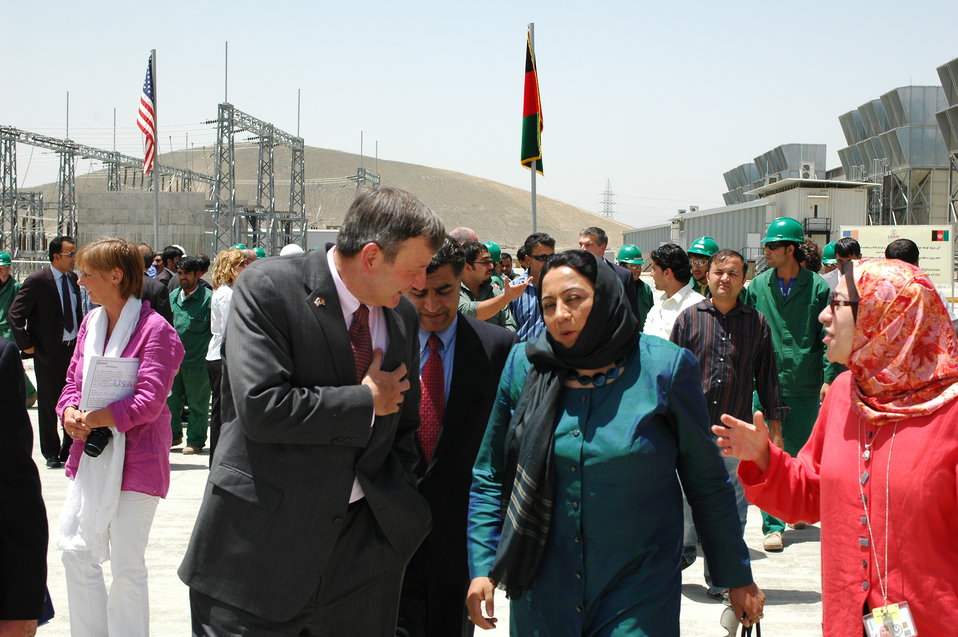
105 MW Tarakhil Power Plant Handover